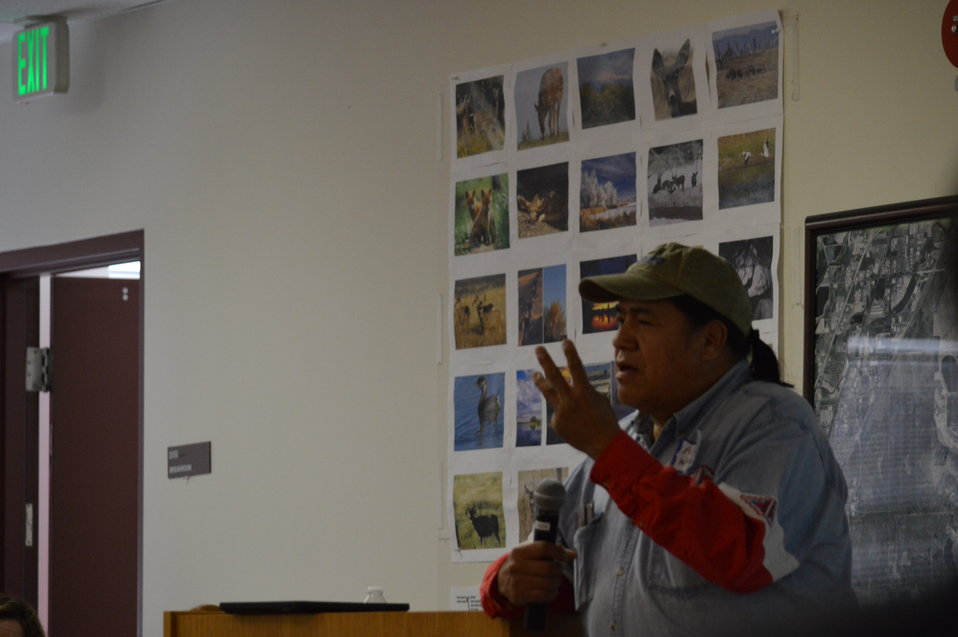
Eagle Summit III

Alvin Windy Boy speaks at the Eagle Summit III in Denver, Colorado on March 20, 2014 at the Rocky Mountain Arsenal National Wildlife Refuge.